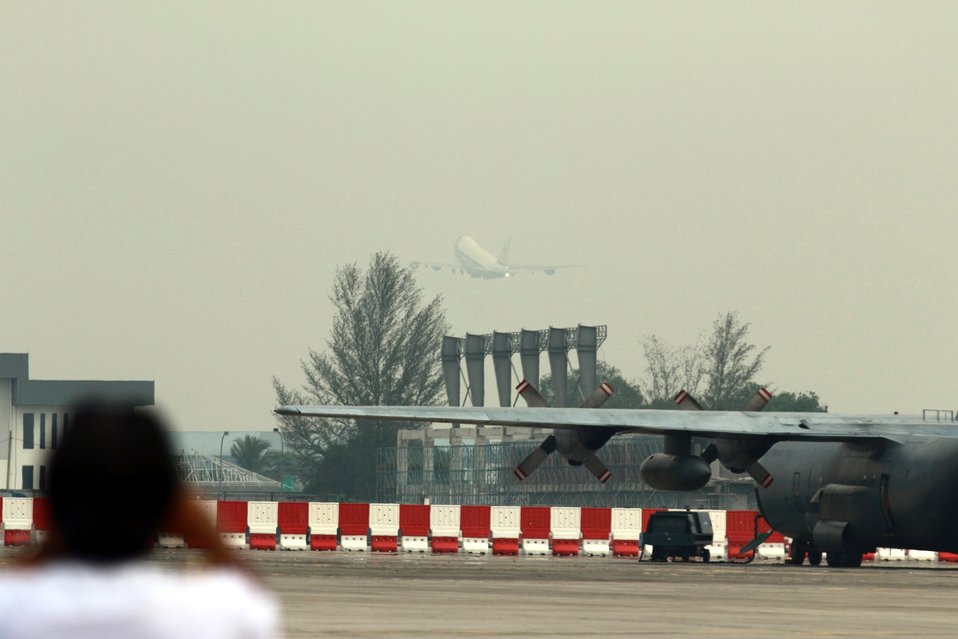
President Obama Departs Kuala Lumpur

U.S. President Barack Obama departs Kuala Lumpur, Malaysia, on April 27, 2014.